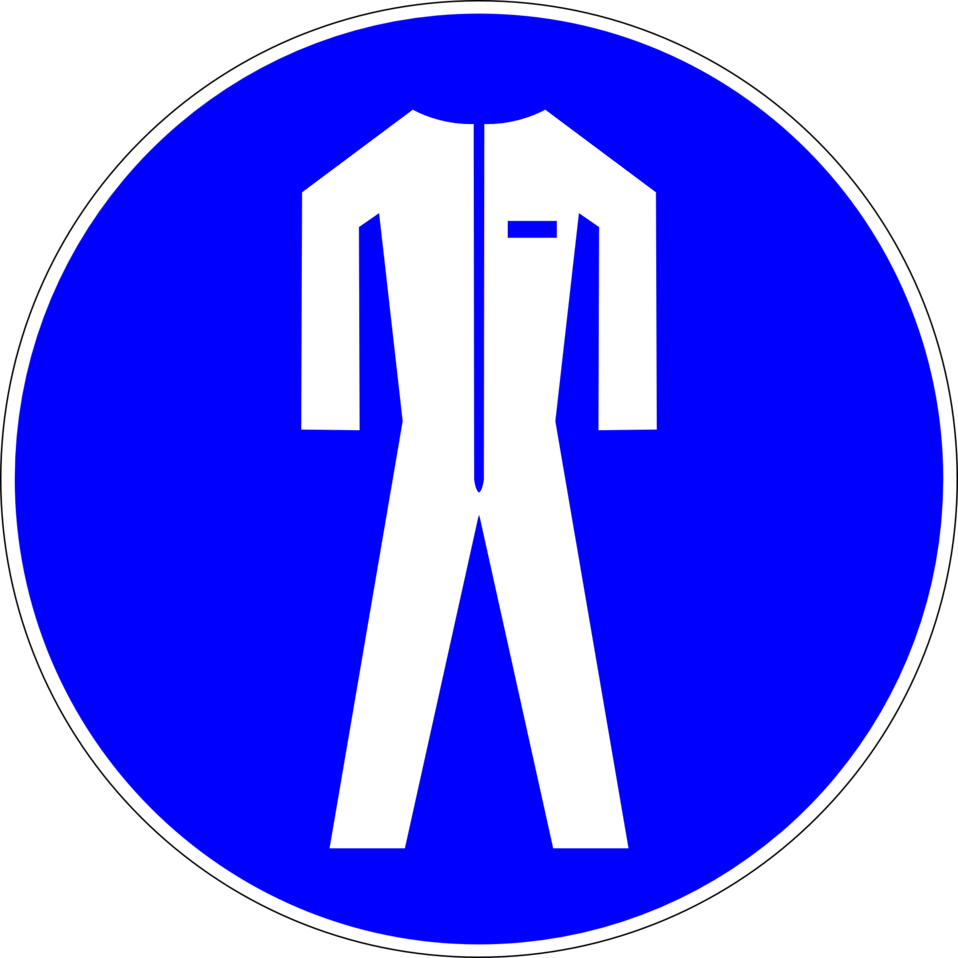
Deutsch: Schutzkleidung benutzen, Gebotszeichen D-M007 nach DIN 4844-2 Use protective clothing, mandatory action sign D-M007 according to German standard DIN 4844-2